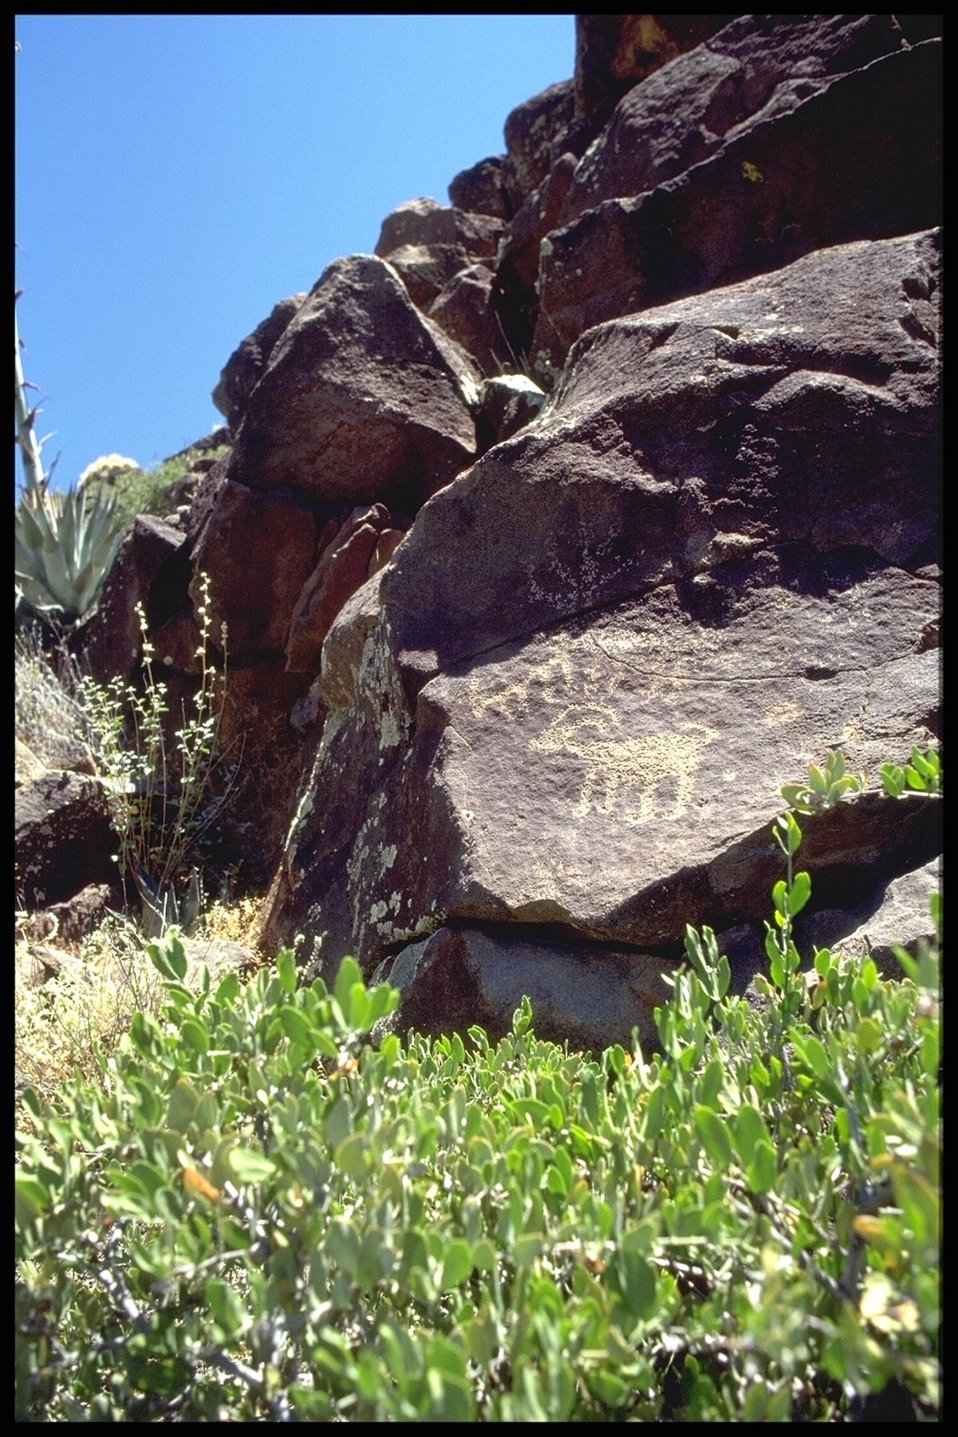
Petroglphs (Rock Art) can be found throughout the 71,000 Acres that make up the Agua Fria National Monument.